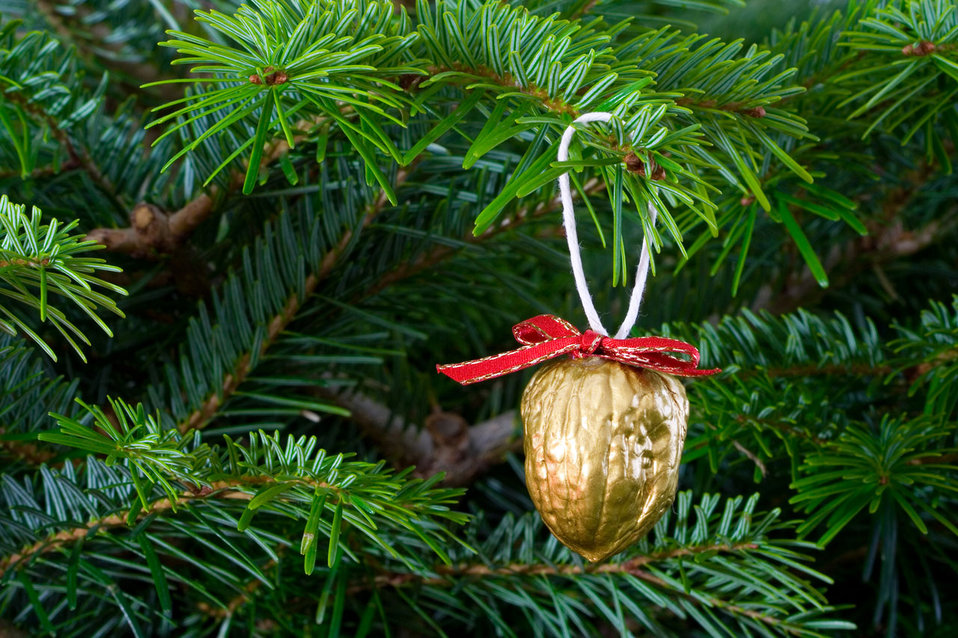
Christmas decoration

A christmas decoration on the tree.